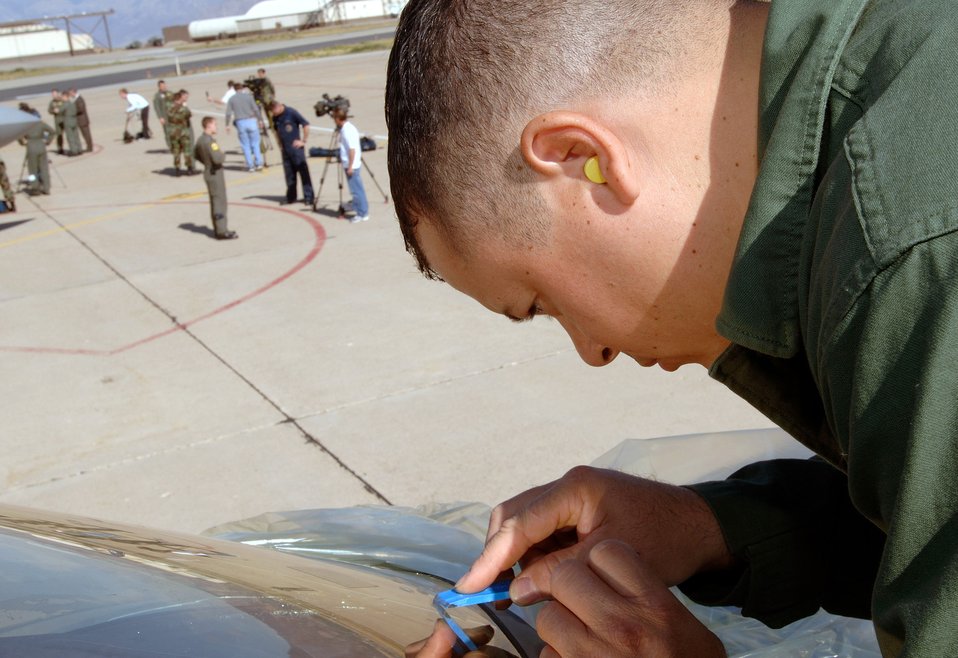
Combat Hammer

HILL AIR FORCE BASE, Utah -- Staff Sgt. Carlos Sepulveda does a minor repair on the cockpit of an F/A-22 Raptor here. A low observable coding maintainer from Langley Air Force Base, Va., he deployed here Oct. 15 with the 27th Fighter Squadron. The unit deployed here to put the first operational F/A-22 Raptor squadron through the paces in a deployment environment, including live bomb training.